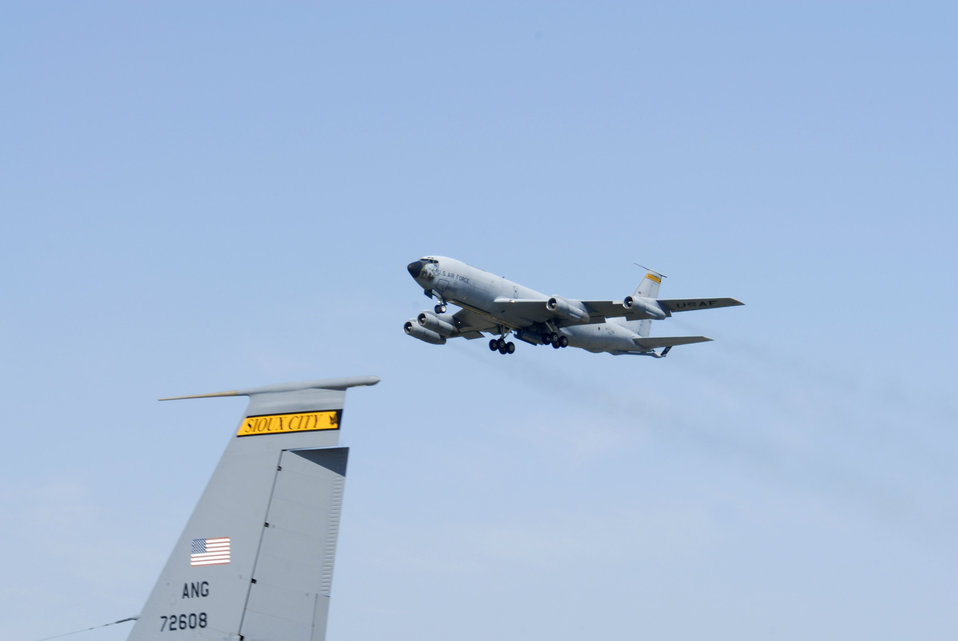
Iowa's KC-135E retires as 'snow bird' in Arizona

An Iowa Air National Guard's aging KC-135 Stratotanker, displaying patriotic nose art, is about to retire. The KC-135E assigned to the 185th Air Reserve Wing in Sioux City, Iowa, was flown out by a flight crew from Tinker Air Force Base, Okla., to Davis-Monthan AFB in Tucson, Ariz., where the aircraft will most likely be retired. The 185th ARW is on track to convert to the newer KC-135 R model this year.